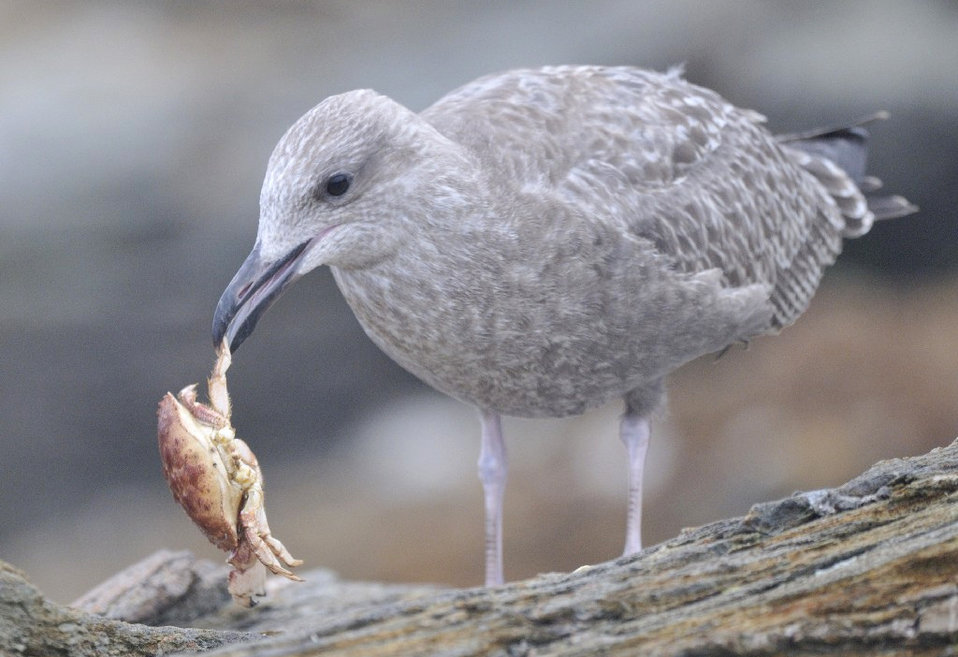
Photo of the Week - Herring Gull (RI)

Photo of the Week - 9/10/12

First winter Herring Gull eating a crab at Beavertail State Park, Jamestown, RI.